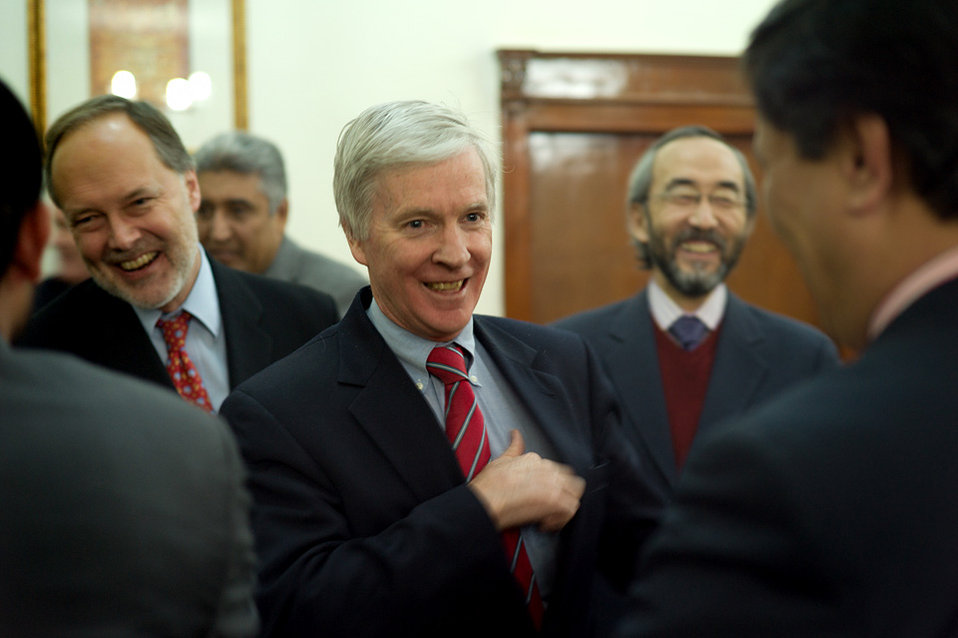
Ambassador Crocker